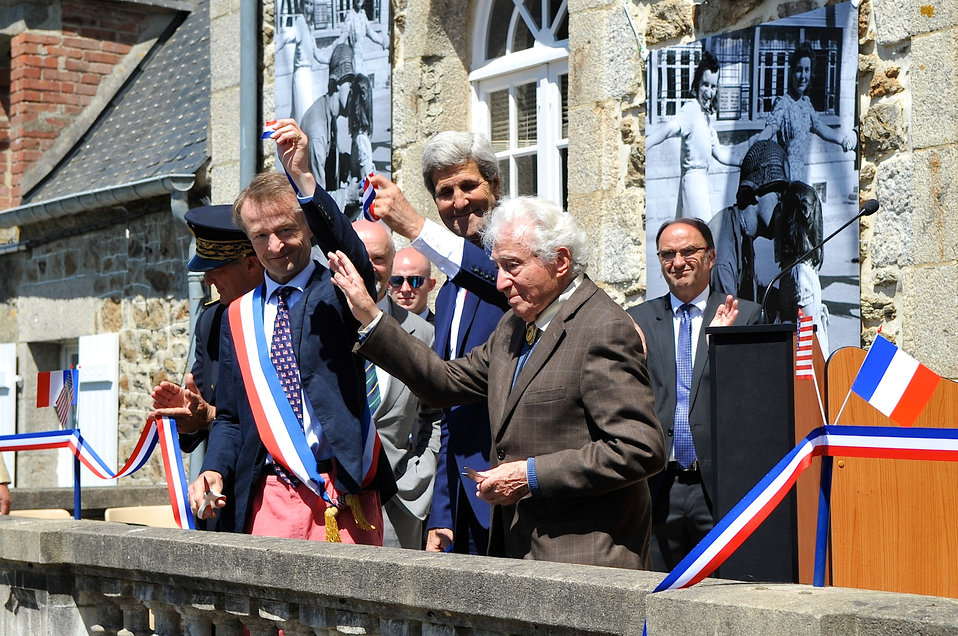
Secretary Kerry, Mayor Denby Wilkes, Photographer Vaccaro Cut Ribbon on Renamed Town Square

U.S. Secretary of State John Kerry, Mayor Vincent Denby-Wilkes, and World War II photographer Tony Vaccaro cut a ribbon during a ceremony to rename the town square of Saint Briac, France, in honor of Vaccaro on June 7, 2014. The ceremony also commemorated the 70th anniversary of D-Day and the endurance of the U.S.-French alliance.